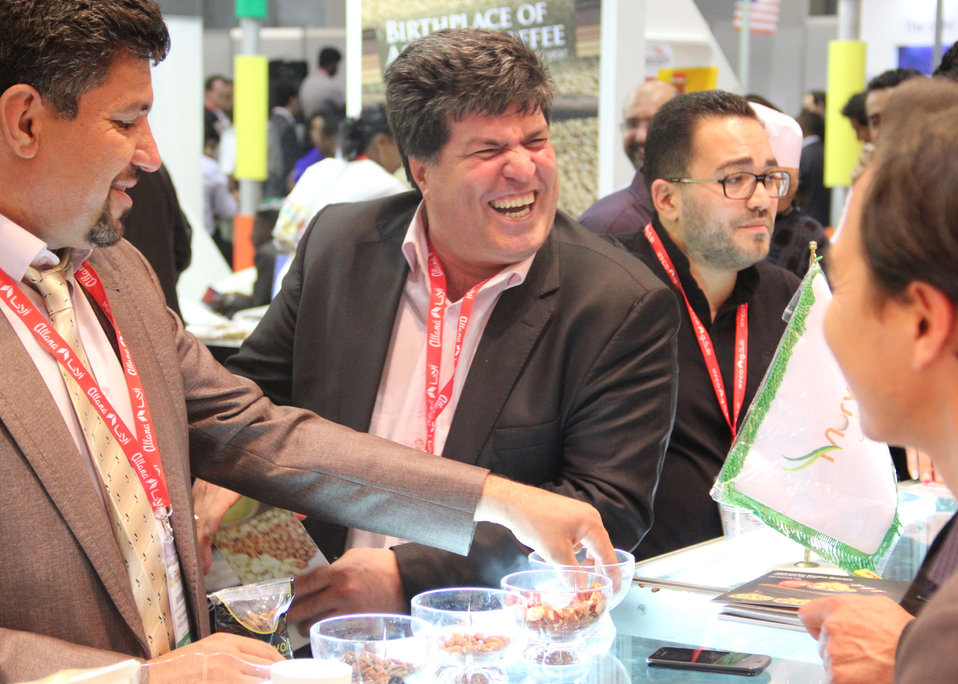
Visitors share a laugh with traders at the Afghanistan Pavilion over samples of the country’s dried fruit and nuts. Afghan traders signed deals worth more than $2 million dollars during the first two days of the exhibition.